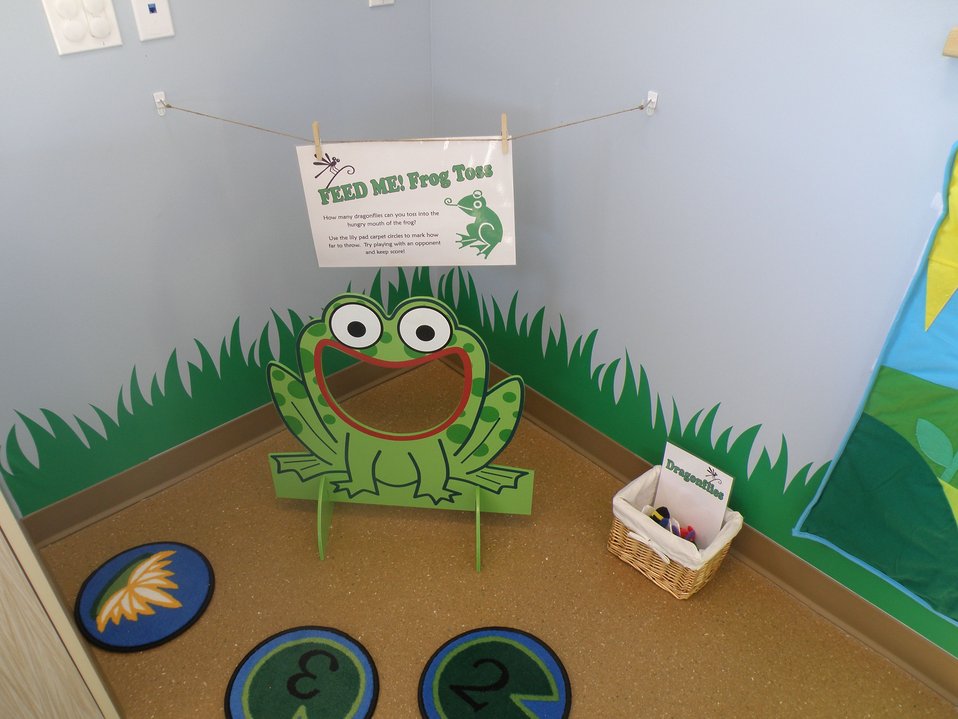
Discovery Room Frog Toss